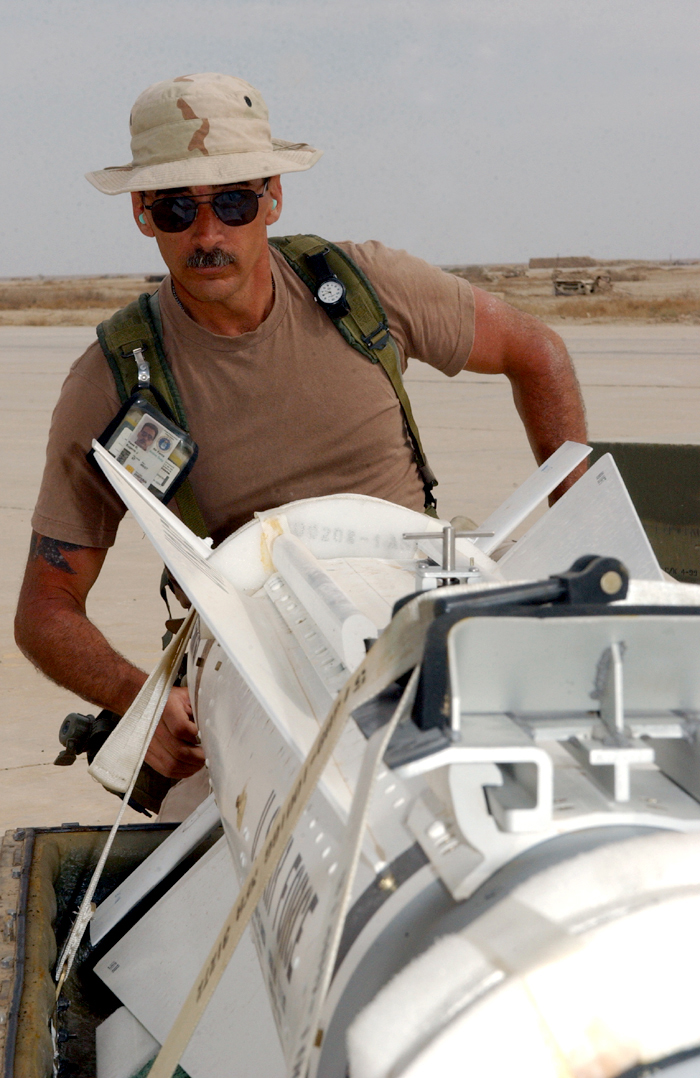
Unspent munitions

OPERATION IRAQI FREEDOM -- Master Sgt. Jay Haas prepares a Maverick missile for repacking. It was unloaded from an A-10 that returned from a combat mission over Iraq. Haas is a weapons loader with the 442nd Fighter Wing from Whiteman Air Force Base, Mo. The wing is deployed to Tallil Air Base in southern Iraq.